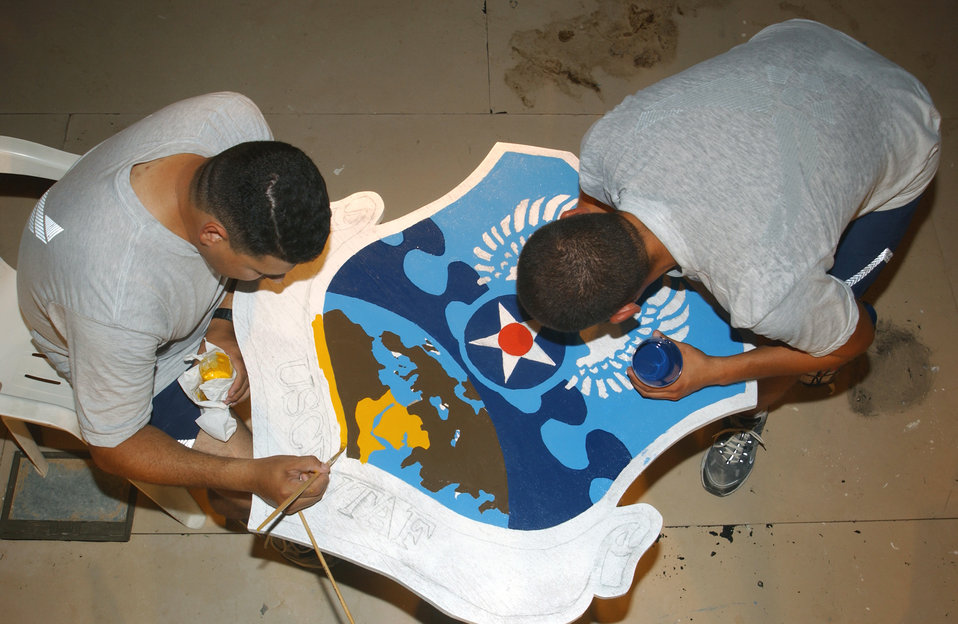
Painting the stage

Master Sgt. Ray Naranjo and Senior Airman Osvaldo Ros-Henriquez paint a plywood U.S. Central Command Air Forces crest Sept. 7, part of a design for a stage recently constructed for the 380th Expeditionary Wing at a forward-operating base in Southwest Asia. Both Airmen were part of a group who won a design contest after the stage was built. The work, which includes the CENTAF and wing crest, took about three weeks to complete. Sergeant Naranjo and Airman Ros-Henriquez are assigned to the 380th Expeditionary Civil Engineer Squadron.